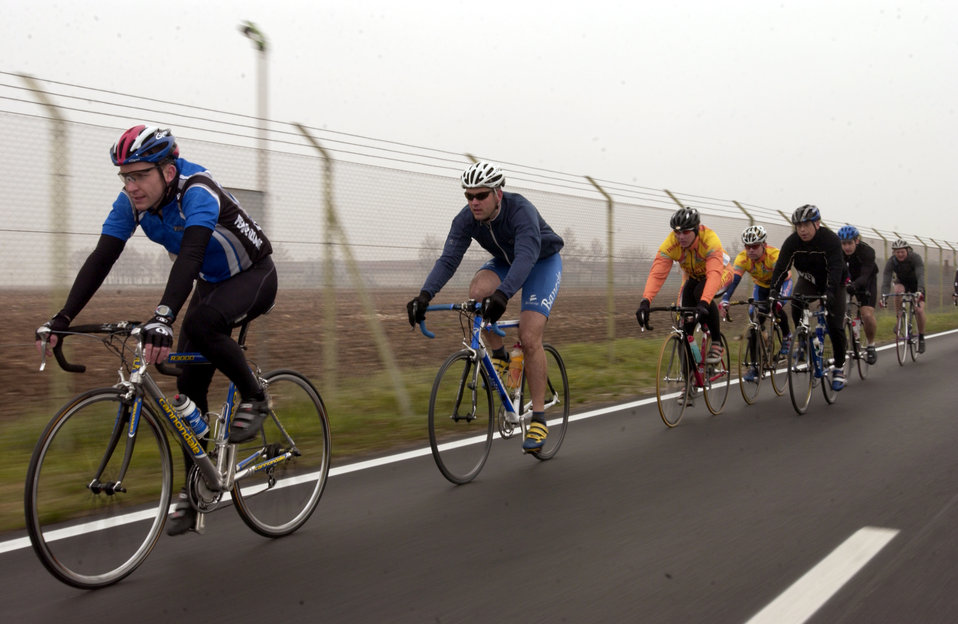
The race is on

AVIANO AIR BASE, Italy - Bicyclists compete in the U.S. Air Forces in Europe road race here April 4. Airmen and Soldiers stationed throughout Europe came here to take part in the first of 12 USAFE cycling events held in during the year.